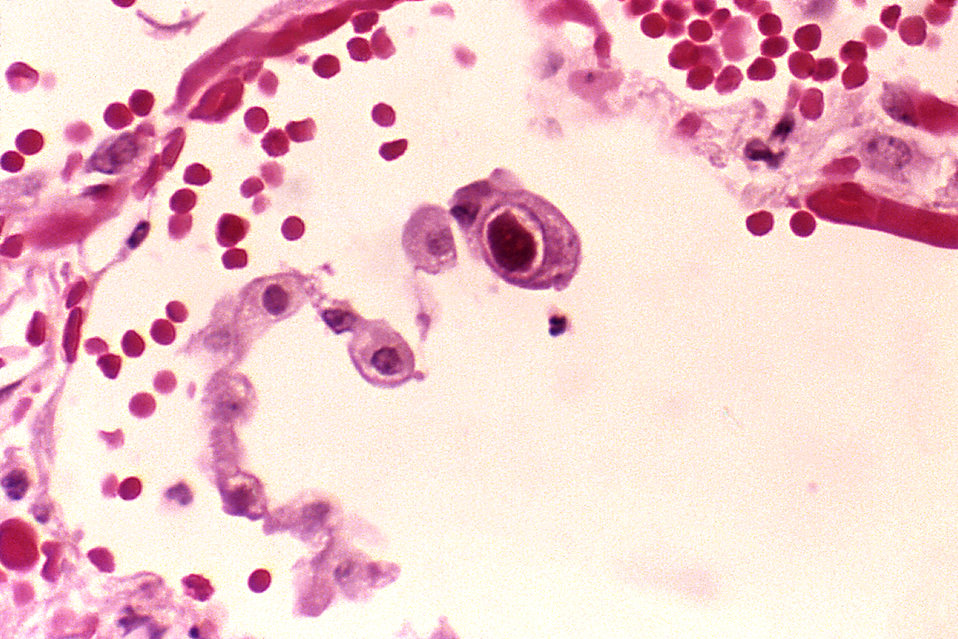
Human Lung Cells

Photomicrograph showing human lung cells infected with cytomegalovirus. Cell at center clearly shows virus particles (large dark red mass) in its nucleus.